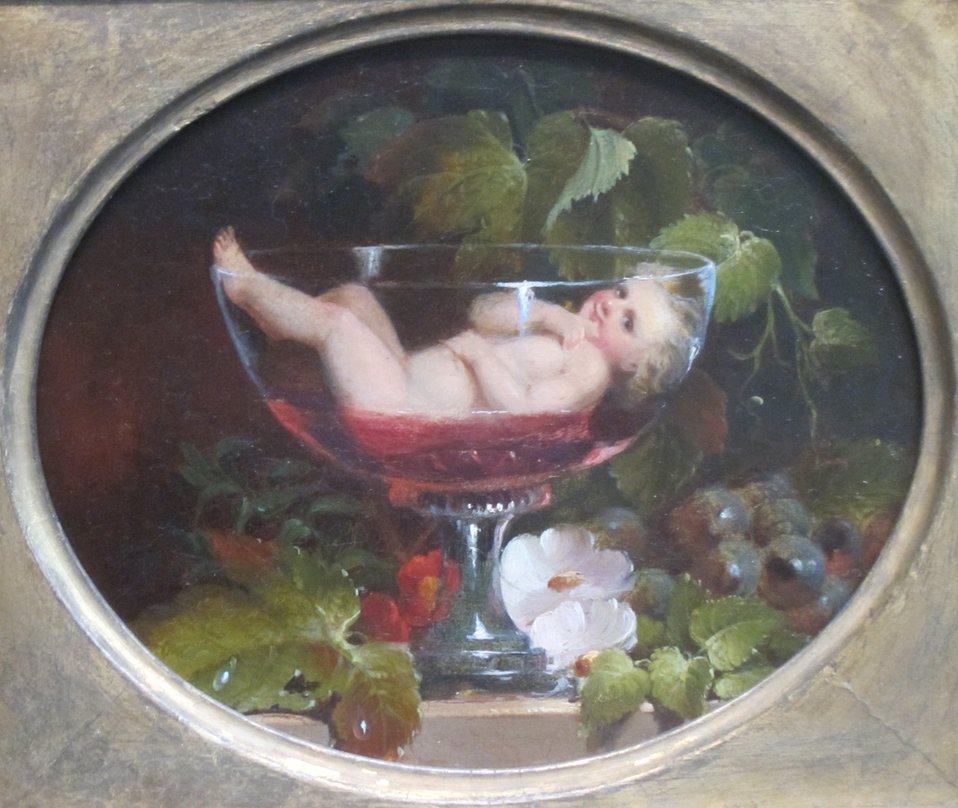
Cupid in a Wine Glass, oil painting by Abraham Woodside, 1840s, Pennsylvania Academy of the Fine Arts